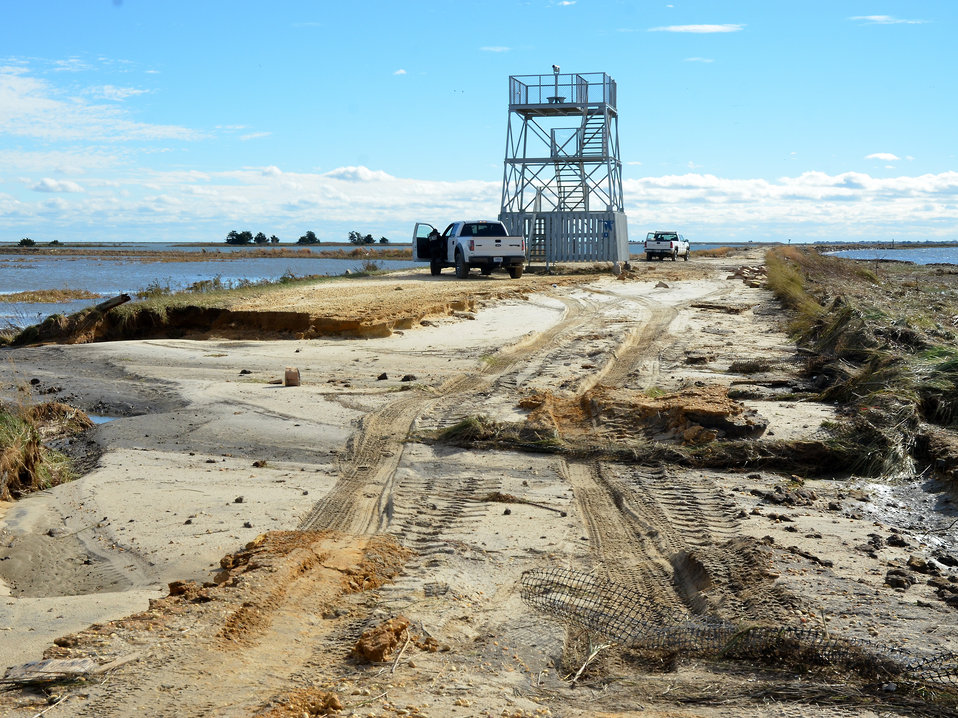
Effects of Hurricane Sandy at Edwin B. Forsythe National Wildlife Refuge (NJ)

Severe erosion on the south dike at Edwin B. Forsythe National Wildlife Refuge after Hurricane Sandy.